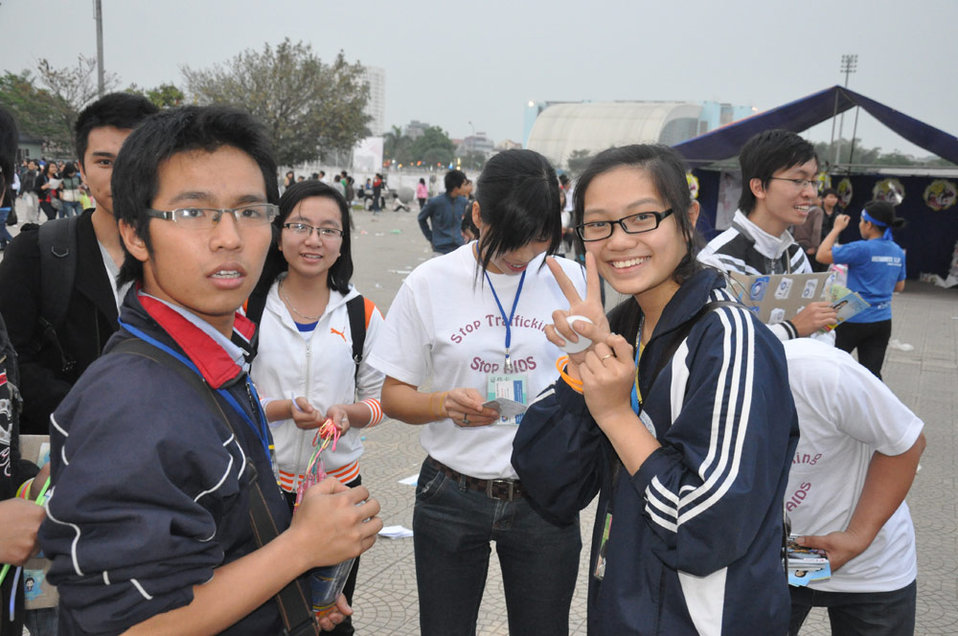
USAID Vietnam and MTVEXIT against Human Trafficking

Hanoi concert, March 27, 2010